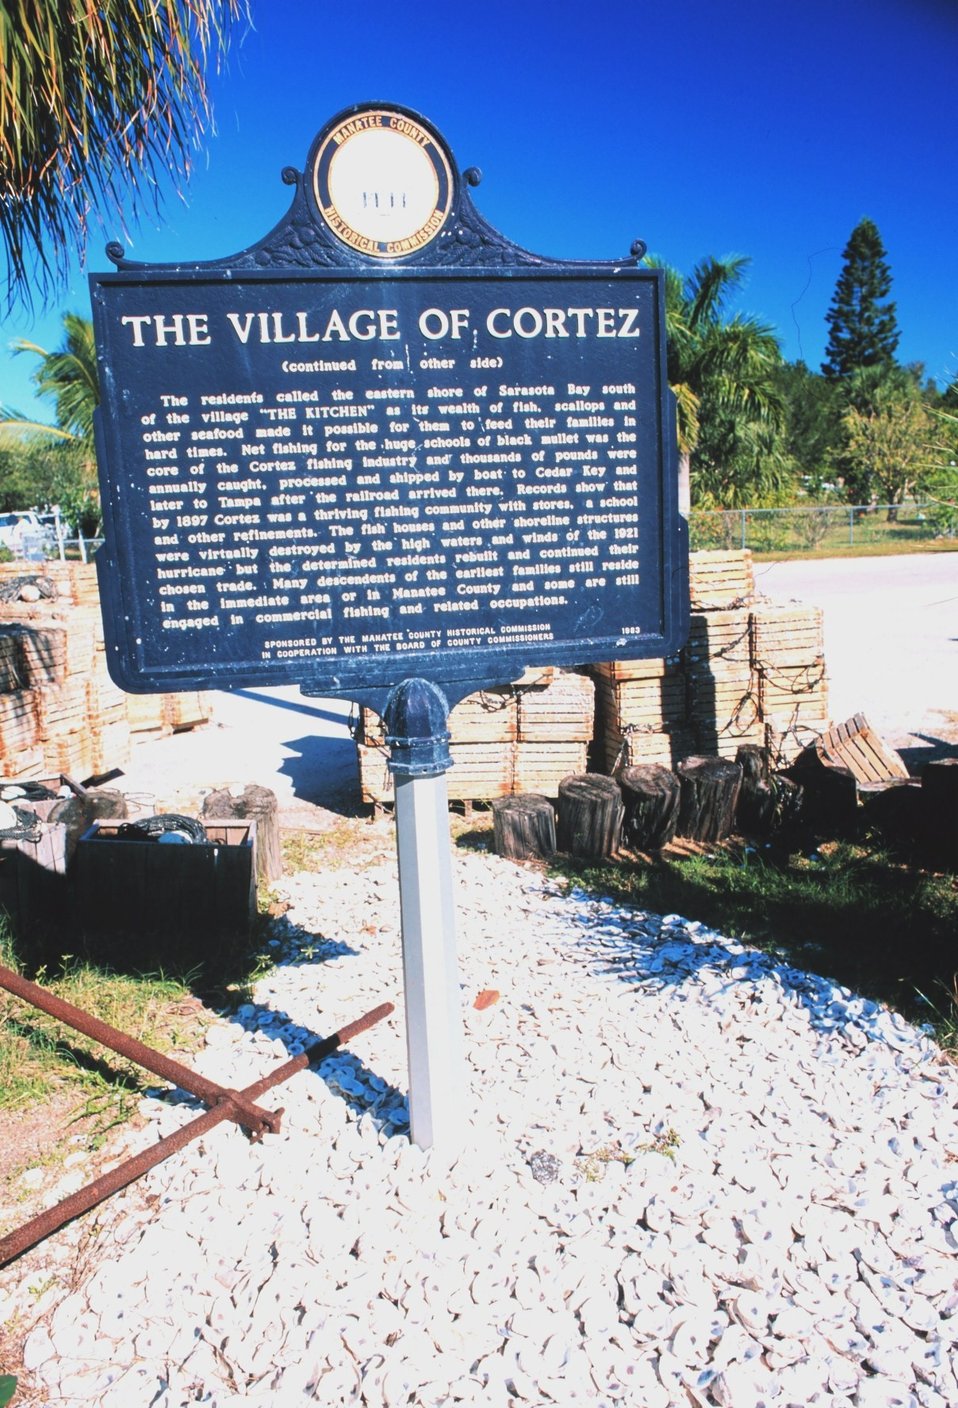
The historic fishing village of Cortez